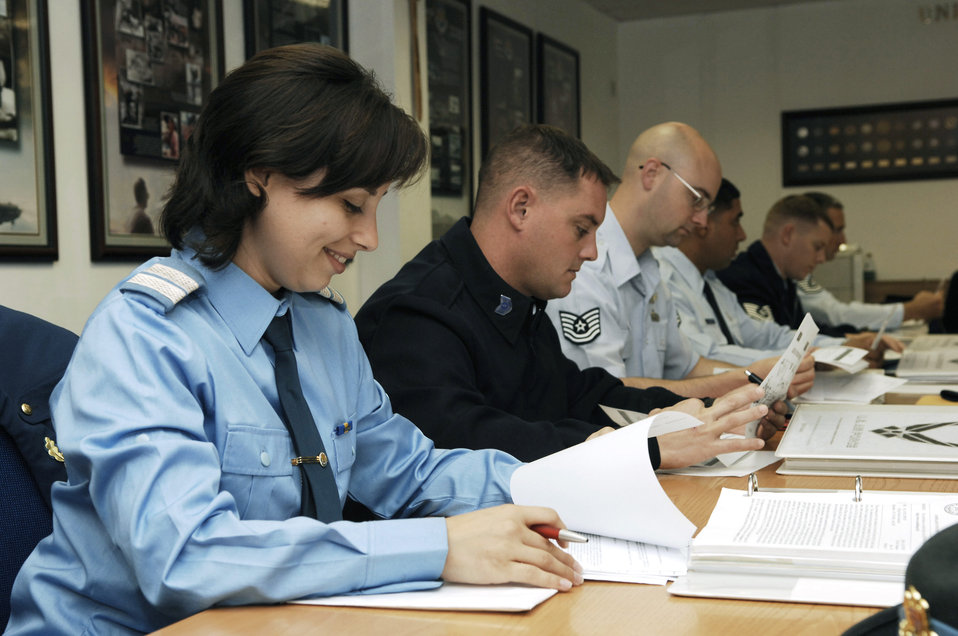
Kisling NCO Academy hosts first international student

Romanian air force Plutonier (Tech. Sgt. equivalent) Diana-Cristina Mireuta (left) attends classes with her U.S. Air Force peers Sept. 21, 2009, at the Kisling NCO Academy at Kapaun Air Station, Germany. Plutonier Mireuta is the first international student to attend the NCO Academy as part of the United States Air Forces in Europe International Military Education and Training initiative.